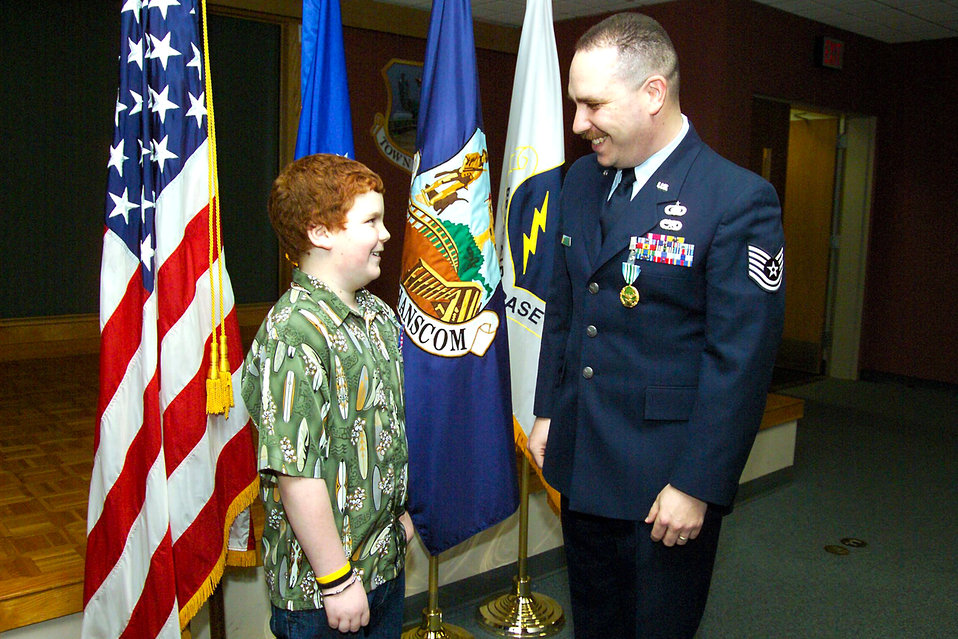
Hanscom children honored with medal

HANSCOM AIR FORCE BASE -- Ten-year-old Ethan Grill beams after receiving his Children's Homefront Heroes Medal from his father, Tech. Sgt. Eric Grill, Feb. 24. The medal, which features a replica of the American flag, is presented to Hanscom children of deployed servicemembers.